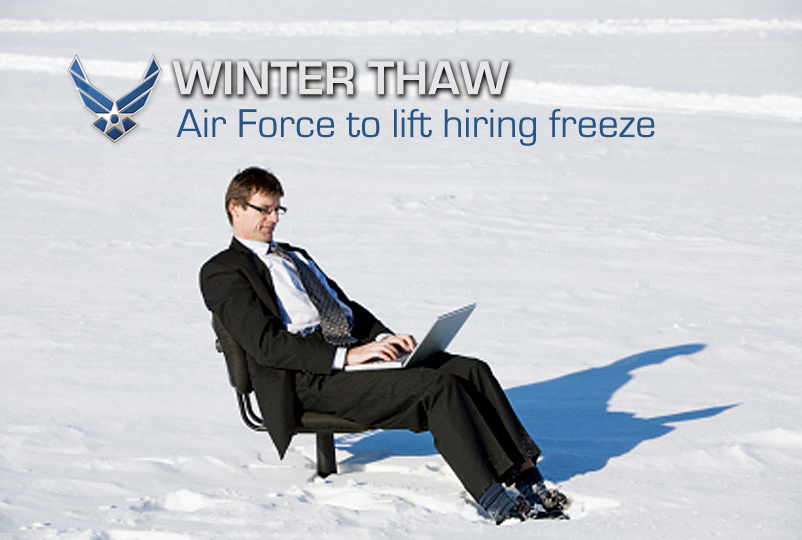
Winter Thaw